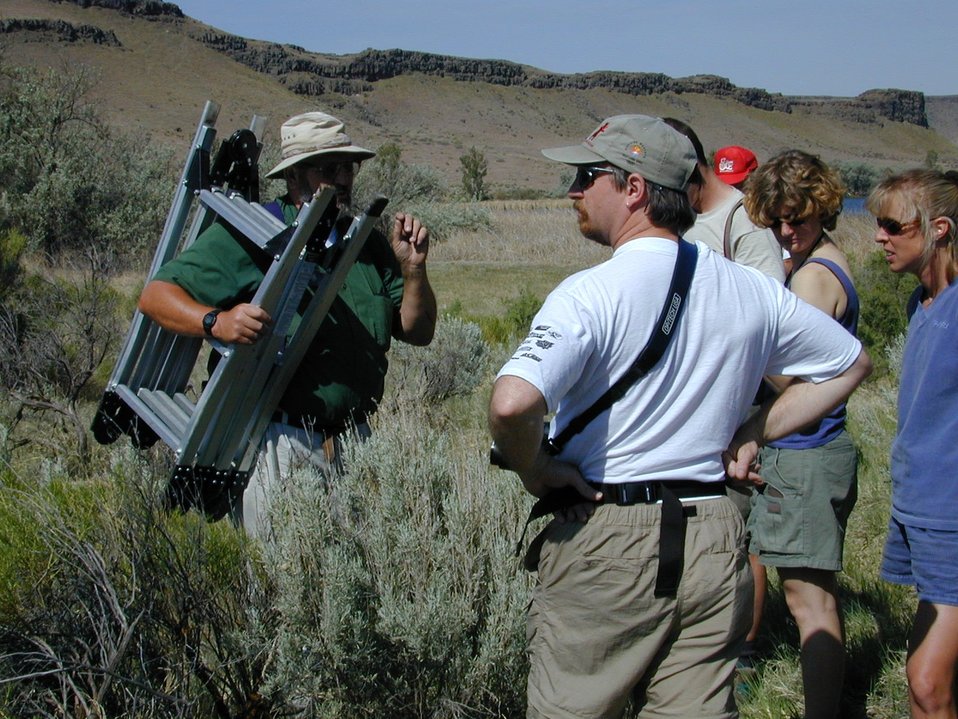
Environmental Education Fire Workshop Timberline High School Fall 2000